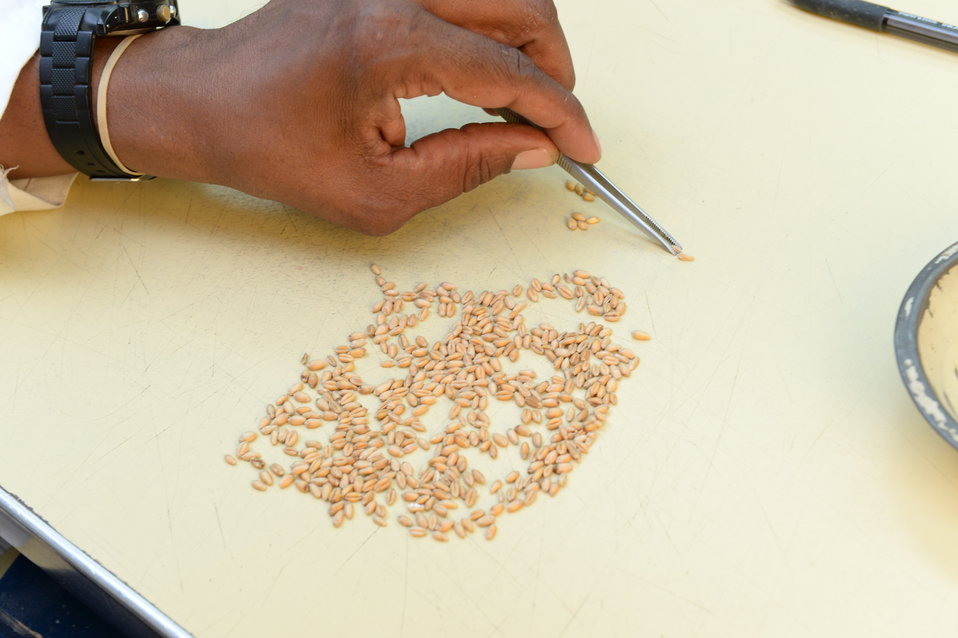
A U.S. Department of Agriculture (USDA) Grain Inspection, Packers and Stockyards Administration (GIPSA) Federal Grain Inspection Service (FGIS) scientist tests wheat at the FGIS inspection laboratory in New Orleans, LA on Monday, Nov. 18, 2013.